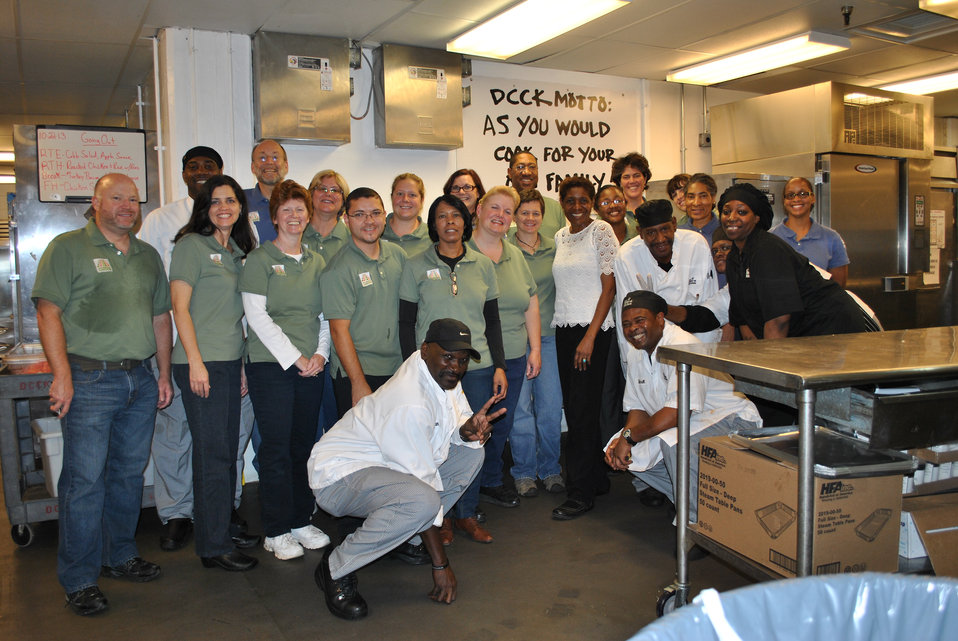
U.S. Department of Agriculture (USDA) Peoples Garden volunteers and DC Central Kitchen (DCCK) staff are all smiles in front of the DCCK motto “As You Would Cook For Your Own Family.” The sign captures the spirit of this volunteer experience.